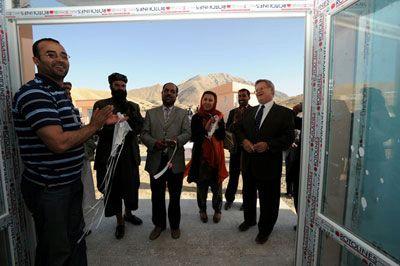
Assistant Secretary Schwartz Participates in a Ribbon-Cutting Ceremony

U.S. Assistant Secretary of State for Population, Refugees, and Migration Eric Schwartz participates in a ribbon-cutting ceremony during the inauguration of a U.S. government-sponsored health clinic at a refugee reintegration program site near Kabul, Afghanistan, on October 10, 2010.